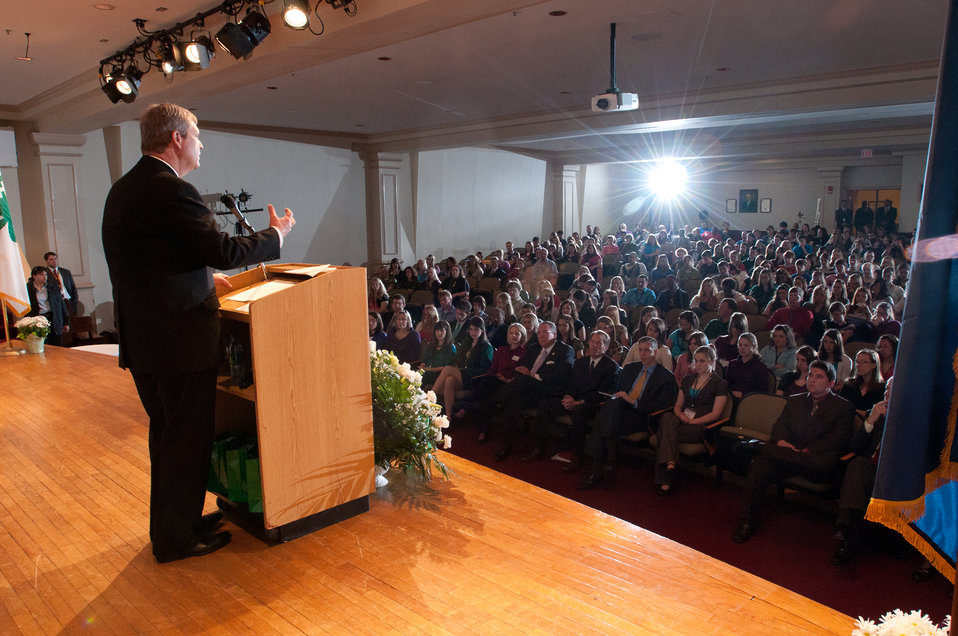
U.S. Department of Agriculture (USDA) Secretary Tom Vilsack spoke with approximately 300 youth from 47 states or territories and Canada at the National 4-H Conference on Tuesday, April 5, 2011 in Washington, DC. The conference is the premier youth development opportunity of the USDA. Aged between 15-19 years old the attendees were selected by various means by their states to be delegates to the conference. The Secretaries then took questions from the audience. Secretary Vilsack received questions on topics such as land grants, what is an average day for him, and both talked of their goals to have 1,000 new farmers and 1,000 new educators.